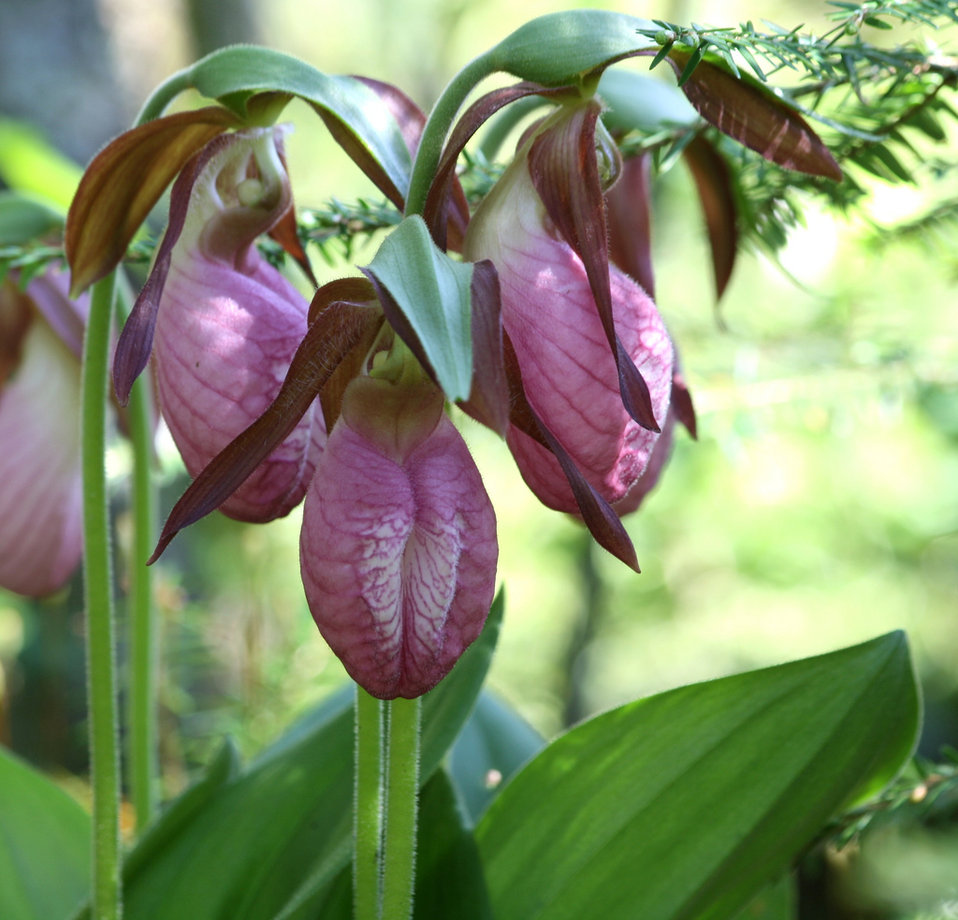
Photo of the Week - Lady Slippers (WV)

Photo of the Week 5/29/12

A grouping of Lady Slippers in a shady corner of Canaan Valley National Wildlife Refuge.